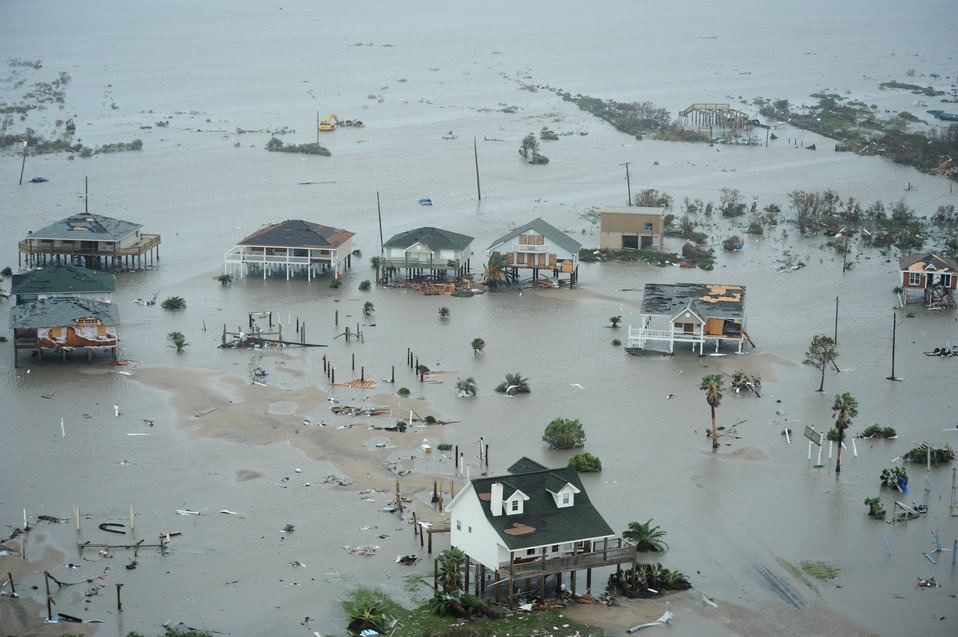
Airmen conduct search, rescue

Galveston Island, Texas, after Hurricane Ike Sept. 13.